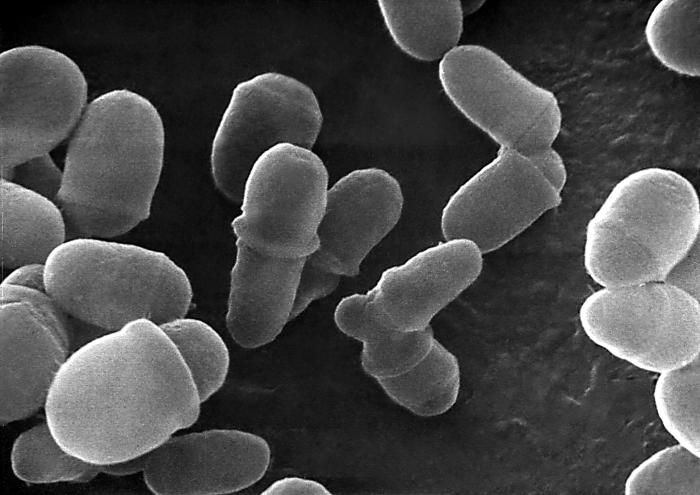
Scanning electron micrograph (SEM) of Malassezia lipophilis.